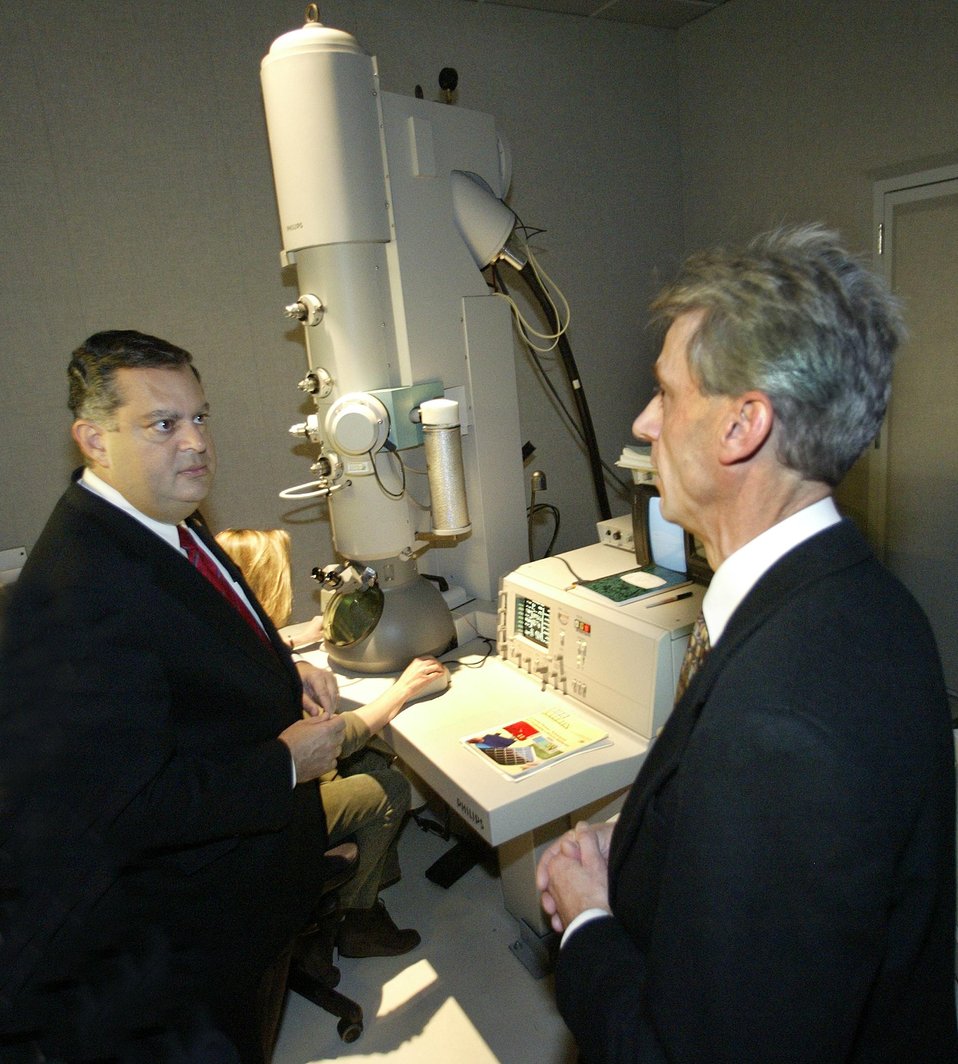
SECRETARY ABRAHAM WITH ULI DAHMEN, HEAD OF LBNL'S NATIONAL CENTER FOR ELECTRON MICROSCOPY IN FRONT OF THE OAM PROJECT, 11-26-02.

SECRETARY ABRAHAM WITH ULI DAHMEN, HEAD OF LBNL'S NATIONAL CENTER FOR ELECTRON MICROSCOPY IN FRONT OF THE OAM PROJECT, 11-26-02.